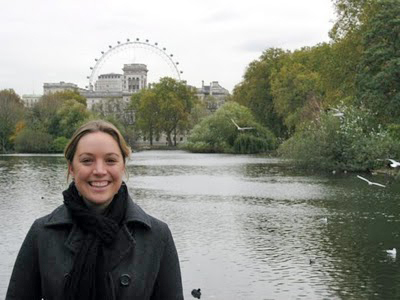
Airmen help save Peace Corps member

Jamie Morris, a Peace Corps volunteer, poses for a photo before a car crash that killed two passengers and left her badly injured Jan. 18, 2010, in Kyrgyzstan. She was driven five hours by ambulance during white-out conditions to the Transit Center at Manas, Kyrgyzstan, where the U.S. Air Force provided medical care and air evacuation to the United States.